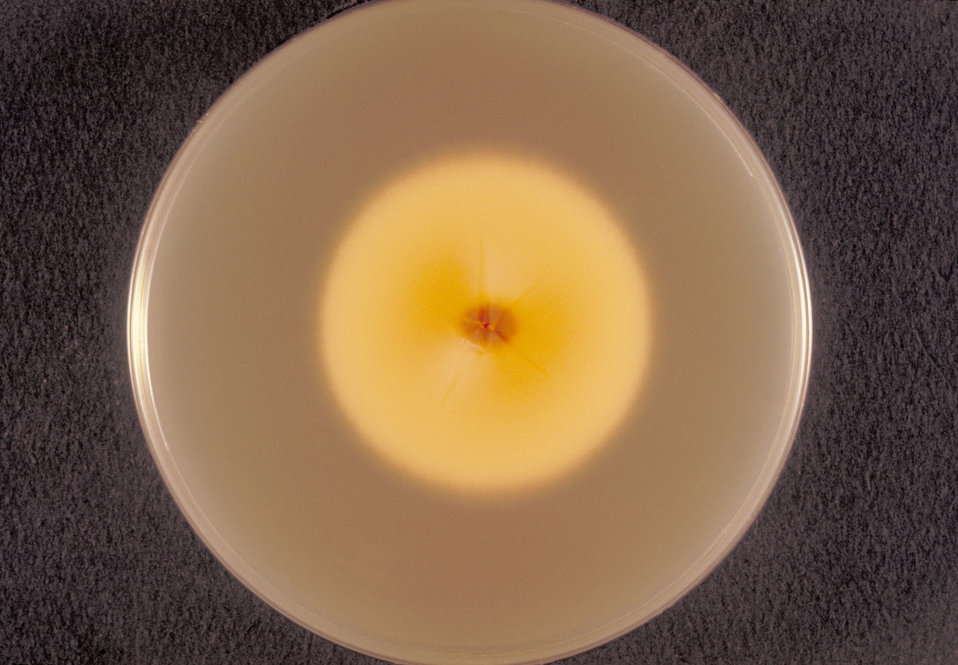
This is the bottom, or 'reverse' view of a Sabouraud's dextrose agar plate culture of Microsporum persicolor.